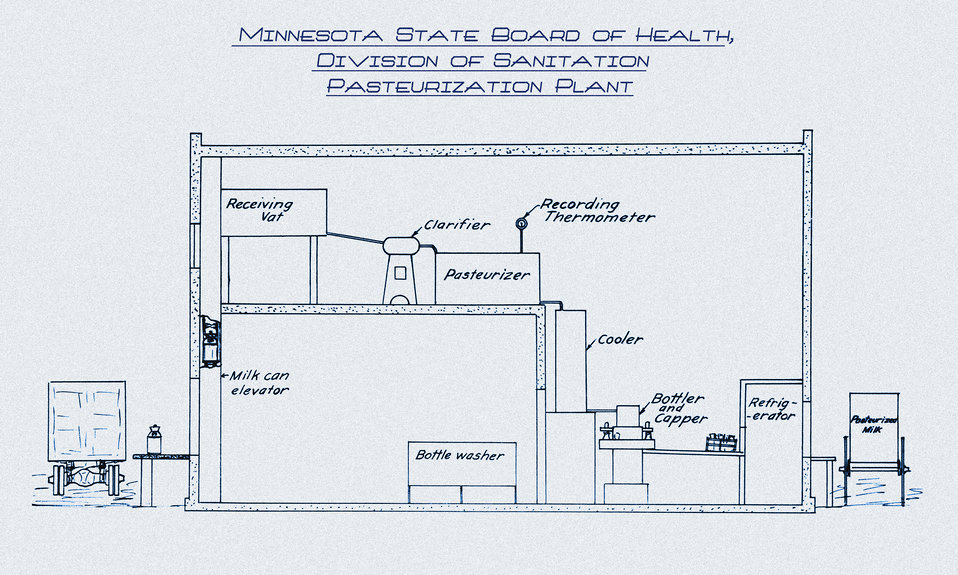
This historic 1926 diagram, which had been digitally enhanced and colorized, depicted a plan for a model milk pasteurization plant in the state of Minnesota. This image was part of a Minnesota Health Department campaign to promote safe food handling and to prevent food-borne illness.